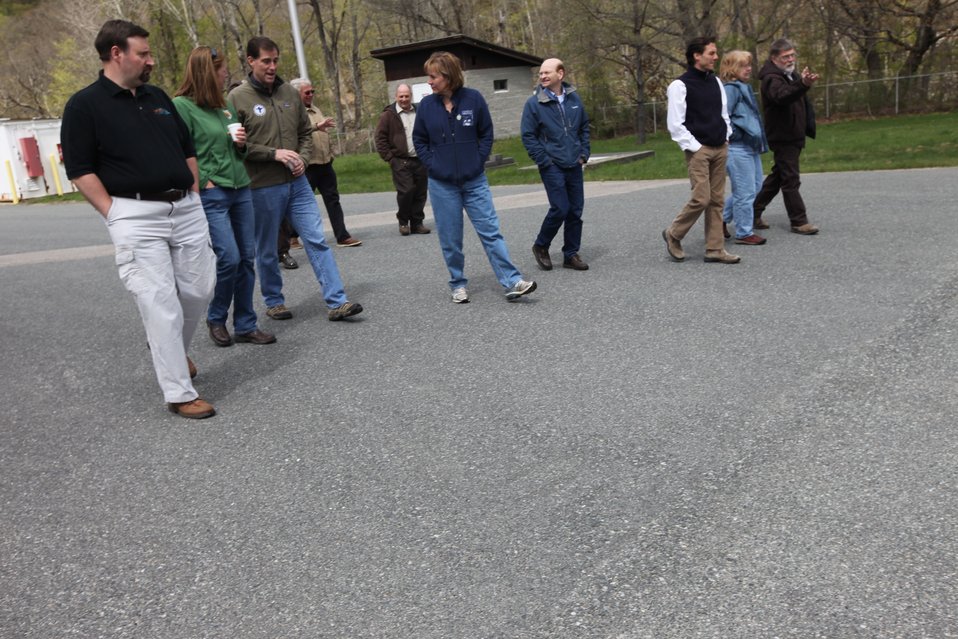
A walking tour with the Director at the hatchery

U.S. Fish & Wildlife Service Director Dan Ashe visits the Northeast Region
for a tour of the White River National Fish Hatchery in Bethel, Vermont on
April 27, 2012. The hatchery was devastated by Tropical Storm Irene and
Dan Ashe had the chance to meet and thank the staff for their heroic work.
Director Ashe also visited restoration/flood response/fish passage project
sites in Rochester, Vermont and met with local officials and staff from the
White River Partnership.